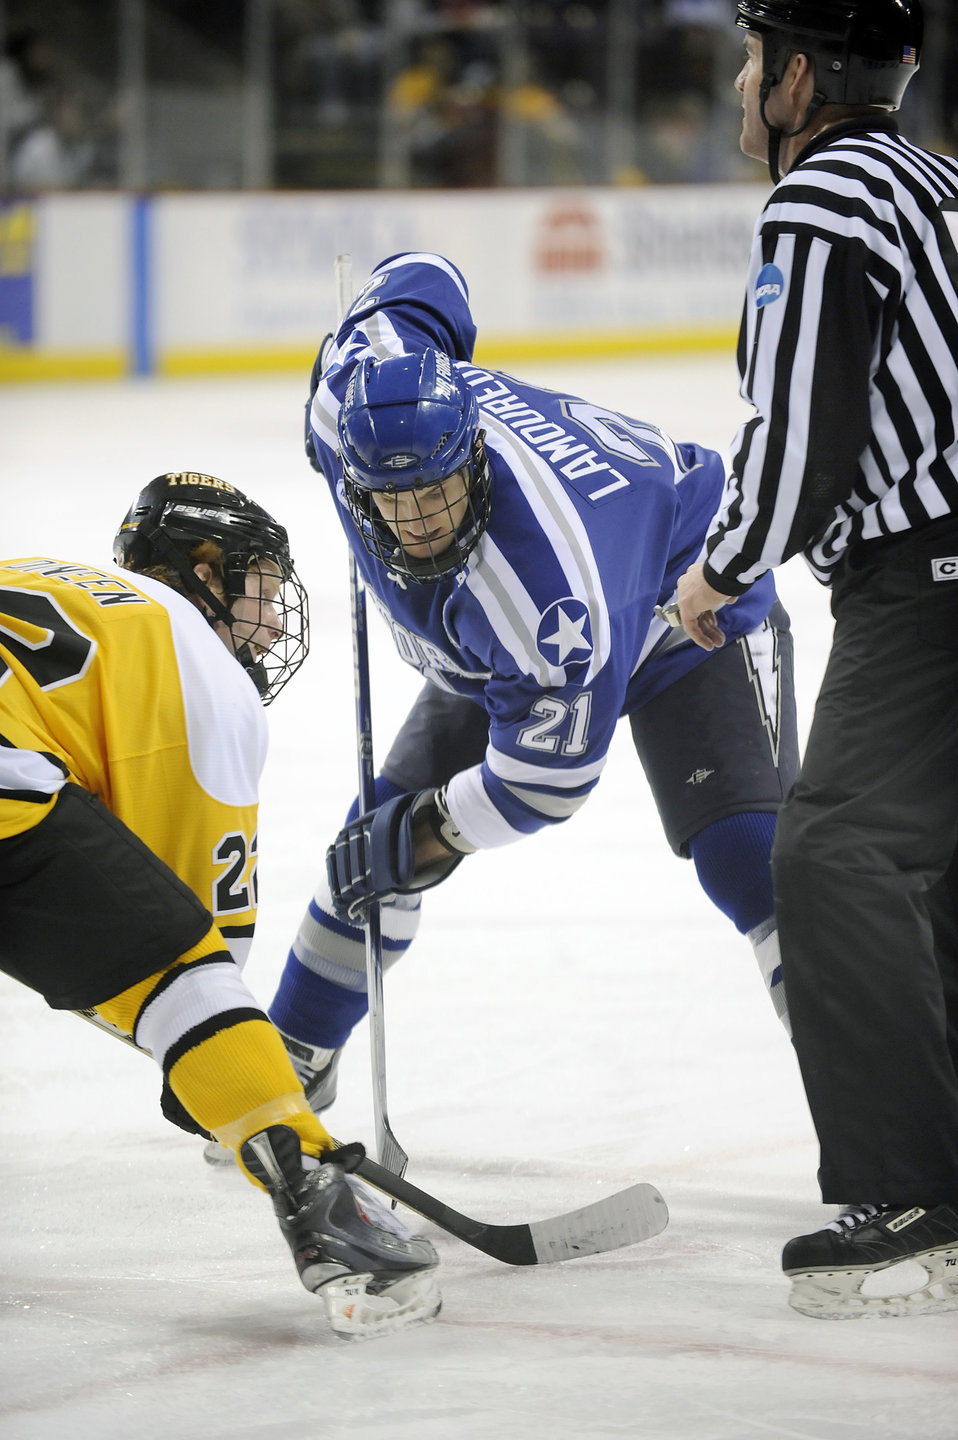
Falcons lose in match with Colorado Tigers

Academy junior forward Jacques Lamoreux prepares to face off as 10th-ranked Colorado College beat Air Force 2-0 in a non-conference hockey game Feb. 5, 2010, at the World Arena in Colorado Springs, Colo. Air Force fell to 12-11-6 overall.